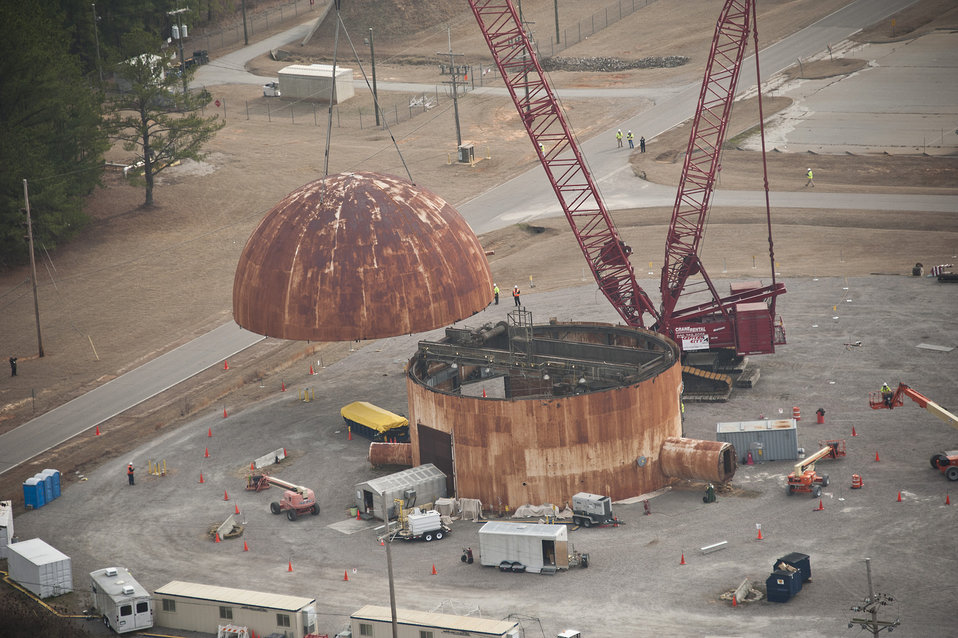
HWCTR Decommissioning

Work is under way to decommission the Heavy Water Components Test Reactor, which had been used to test experimental fuel assemblies for commercial heavy-water power reactors. SRS is scheduled to remove the dome of the reactor this month (January 2011). Workers also will displace the reactor vessel and steam generators, grout the remaining structure in place, and install a concrete cover over the reactor’s footprint.